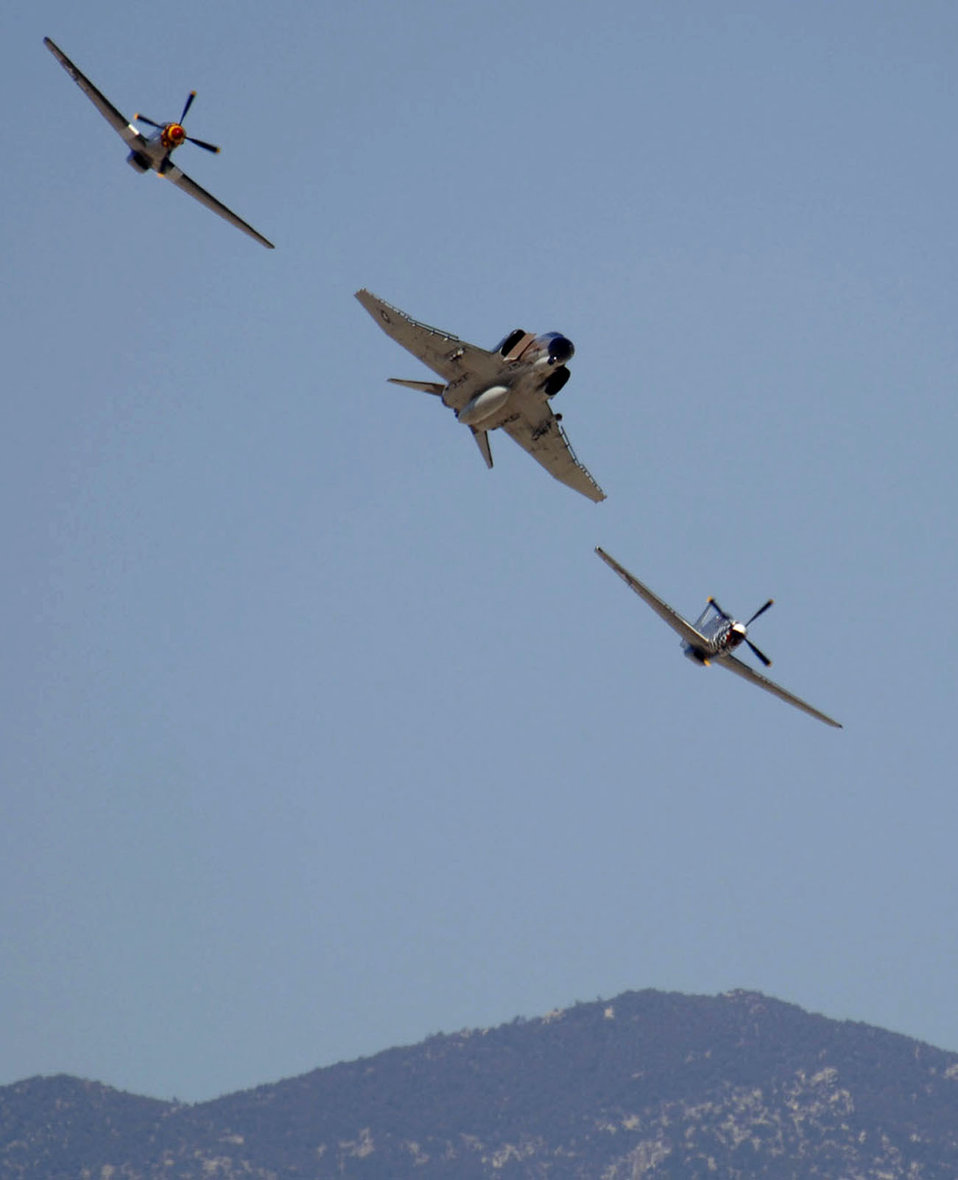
Demonstration team excels at Heritage Conference

Two P-51 Mustangs flank an F-4 Phantom II while demonstrating aerial capabilities March 3 during the 2007 Heritage Conference at Davis-Monthan Air Force Base, Ariz. The conference provides an opportunity for ACC demonstration pilots to train together with modern and historic military aircraft in preparation for the upcoming air-show season.